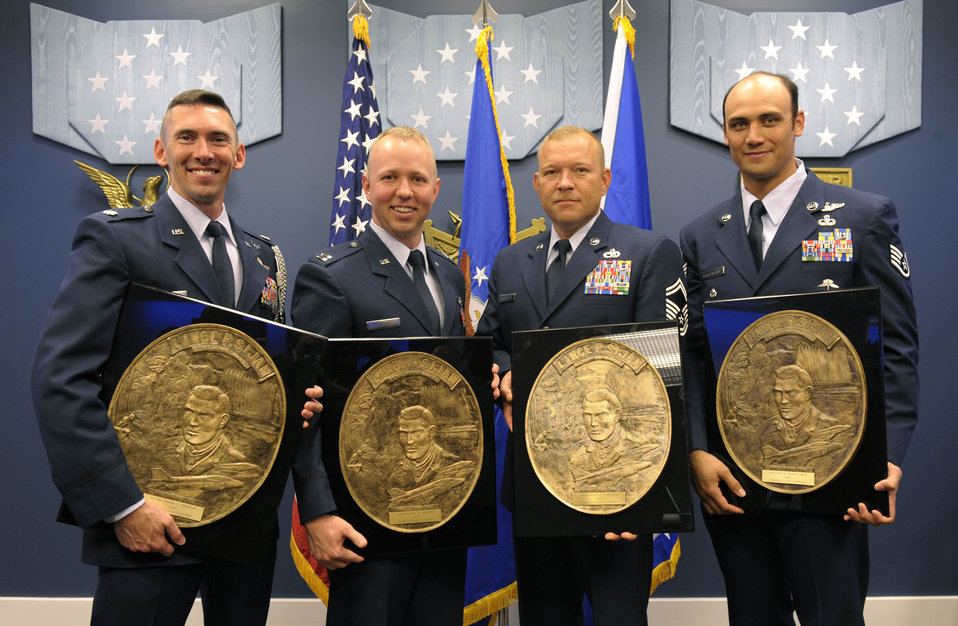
Lance P. Sijan Leadership Award

Lt. Col. Roger A. Sherman (from left), Capt. Thomas Phillips (accepting on behalf of his sister, Capt. Rachel Phillips), Senior Master Sgt. Jesse D. Schraner and Staff Sgt. Gino P. Kahaunaele pose with their respective 2009 Lance P. Sijan Leadership Awards following a ceremony April 21, 2010, in the Pentagon's Hall of Heroes. The annual award was created in 1981 to recognize four Airmen who demonstrate the highest qualities of leadership both in and out of uniform.